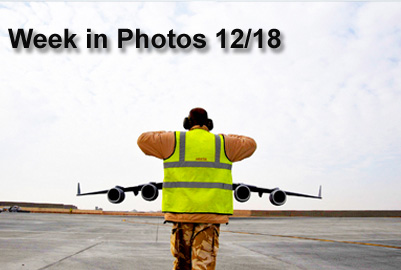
Week in Photos

Air Force Week in Photos for Dec. 18 highlights photos from around the Air Force. In this photo by Staff Sgt. Angelita Lawrence, a British air force member guides a U.S Air Force C-17 Globemaster III into a parking spot Dec. 11, 2009, at Camp Bastion, Afghanistan.